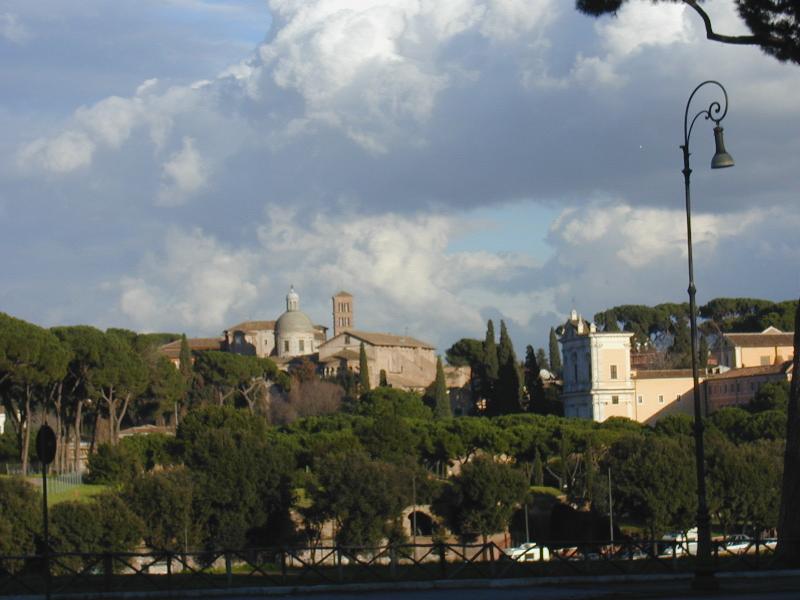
001229 19 s gregorio dal circo Massimo